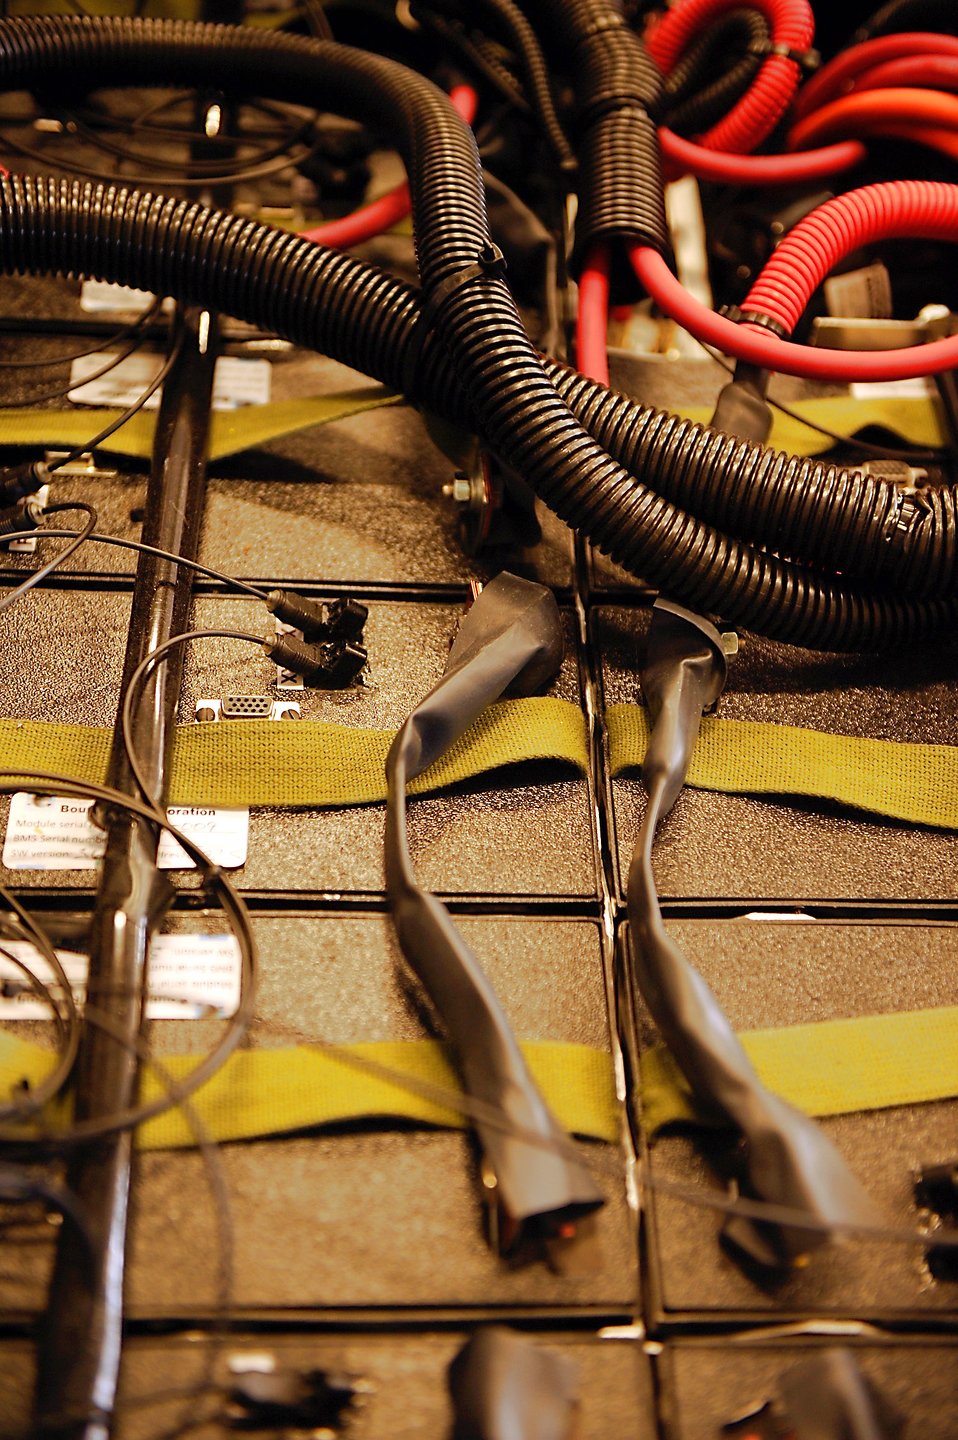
Maintainers go 'green' with electric vehicles

Shown are 20 lithium ion batteries used to power an electric munitions loader, which is part of an ongoing test for future electric-powered vehicles at Moody Air Force Base, Ga.